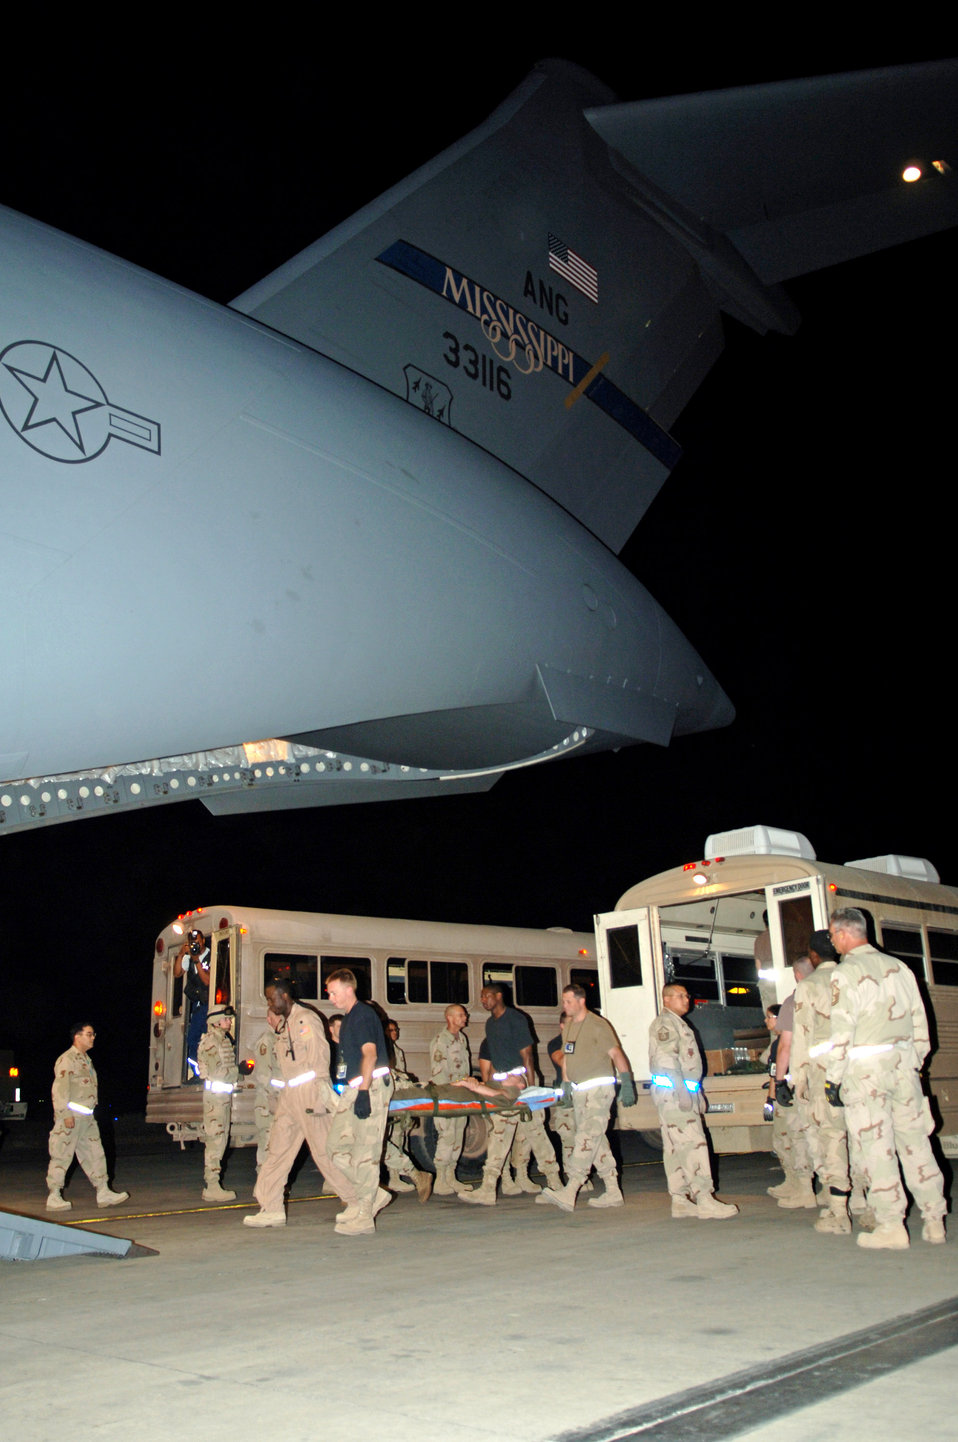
The best care in the air

Airmen from the 721st Air Mobility Operations Group and 332nd Air Expeditionary Wing carry patients about to be aeromedically evacuated onto a C-17 Globemaster III at Balad Air Base, Iraq, on Friday, June 9, 2006.